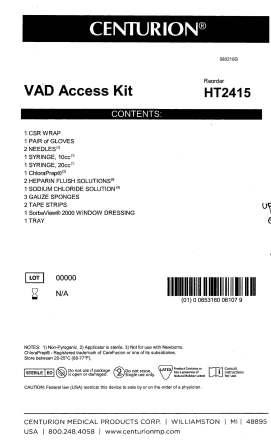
RECALLED - Convenience kits which contain bacteriostatic sodium chloride solution by American Regent

April 1, 2011 - Product Recall - Centurion Medical Products Initiates Voluntary Recall of Customized Convenience Kits (including select Central Venous Catheter, PICC Insertion, and VAD Trays) that contain American Regent’s Bacteriostatic Sodium Chloride Injection, USP, 0.9% 30 mL Multiple Dose Vials.